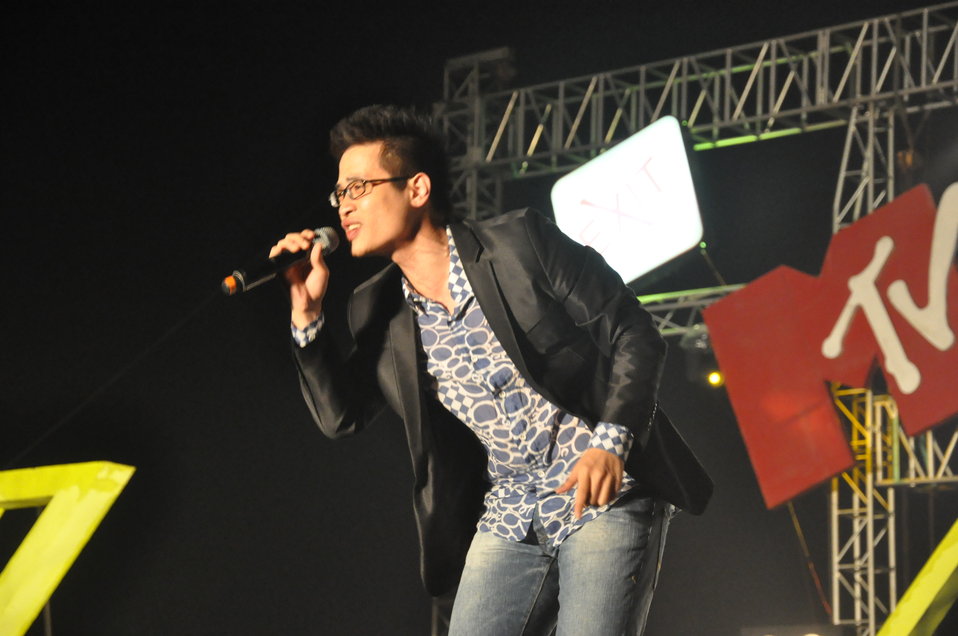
USAID and MTVEXIT Concert Halong Bay

Halong Bay Concert, April 3, 2010